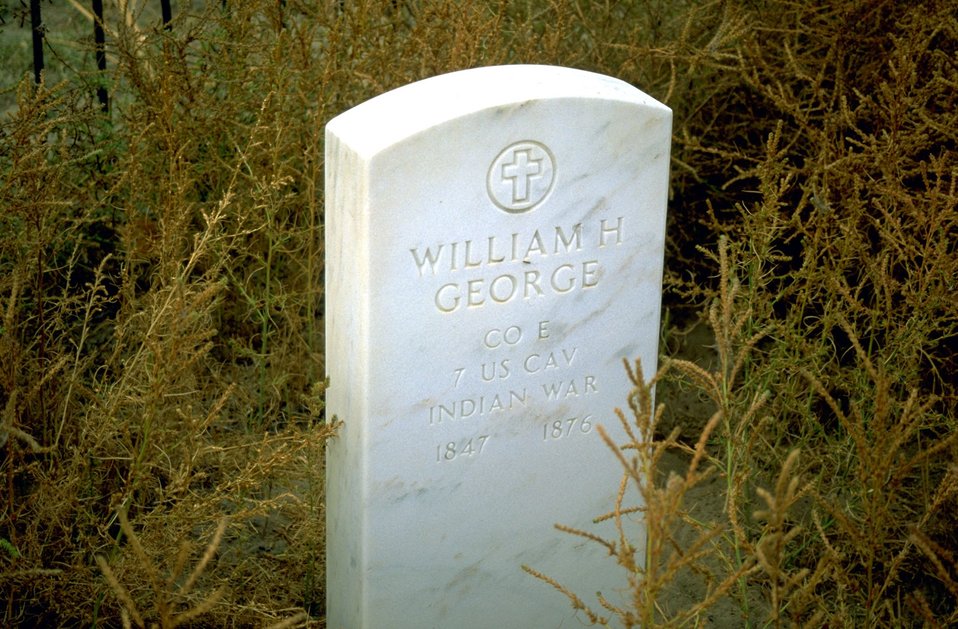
Headstone of William George of Custer's 7th Cavalry